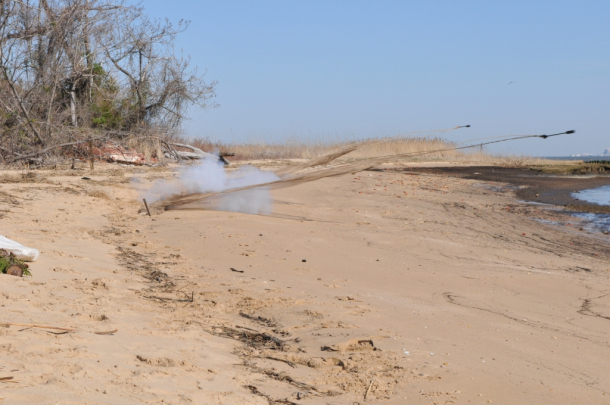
Cannon Net

A cannon net is fired!